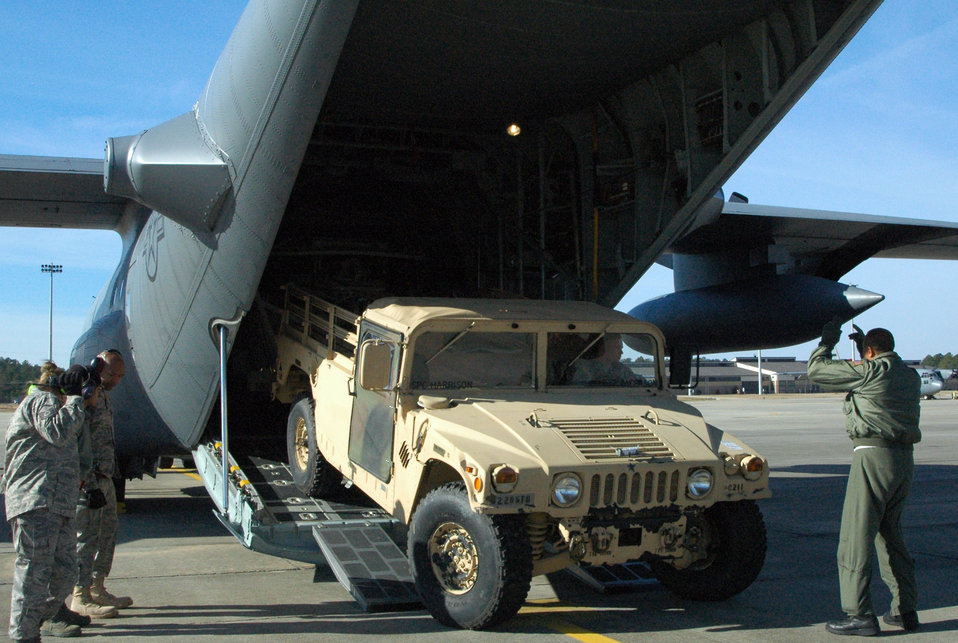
Airmen deliver Soldiers, communication equipment to Haiti

Chief Master Sgt. Byron Todd (far right) guides Army Staff Sgt. Luke Skinner as he backs a satellite communication uplink trailer into an awaiting Air Force Reserve C-130 Hercules Jan. 27, 2010, at Pope Air Force Base, N.C. Sergeant Skinner and more than 10 members of his unit later arrived at Port-au-Prince, Haiti, where they deployed in support of earthquake relief operations. Chief Todd is a loadmaster assigned to the Minnesota Air National Guard's 133rd Airlift Wing in Minneapolis-St. Paul. Sergeant Skinner is assigned to the 82nd Airborne Division.